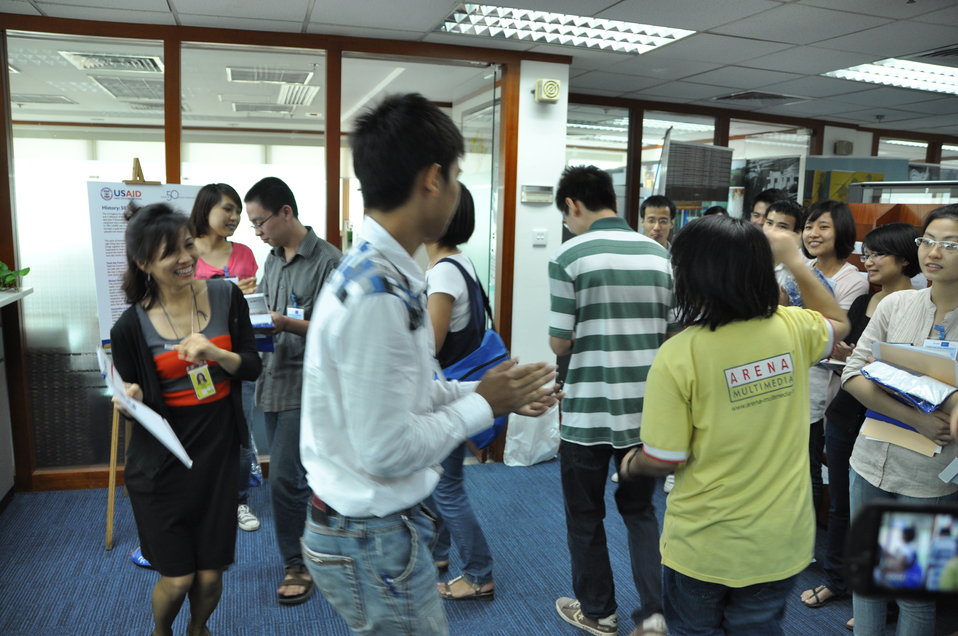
USAID Vietnam Open House 50th Anniversary, Hanoi